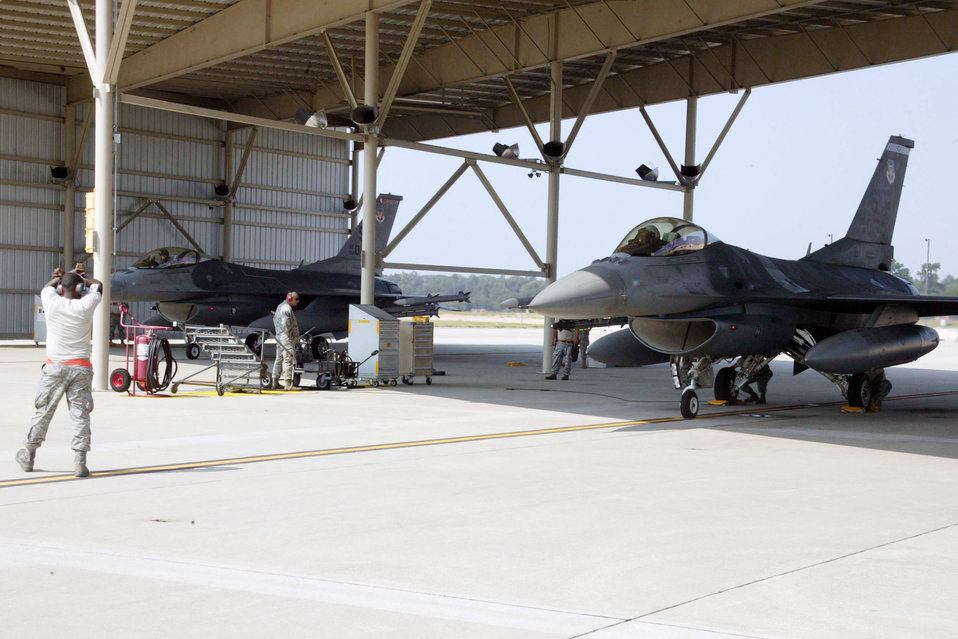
Shaw Airmen train with South Carolina Civil Air Patrol

Alert F-16 Fighting Falcons are readied to roll during an alert mission exercise Aug. 11 at Shaw Air Force Base, S.C. The exercise provided training for the alert maintenance crew and pilots for real-world situations.